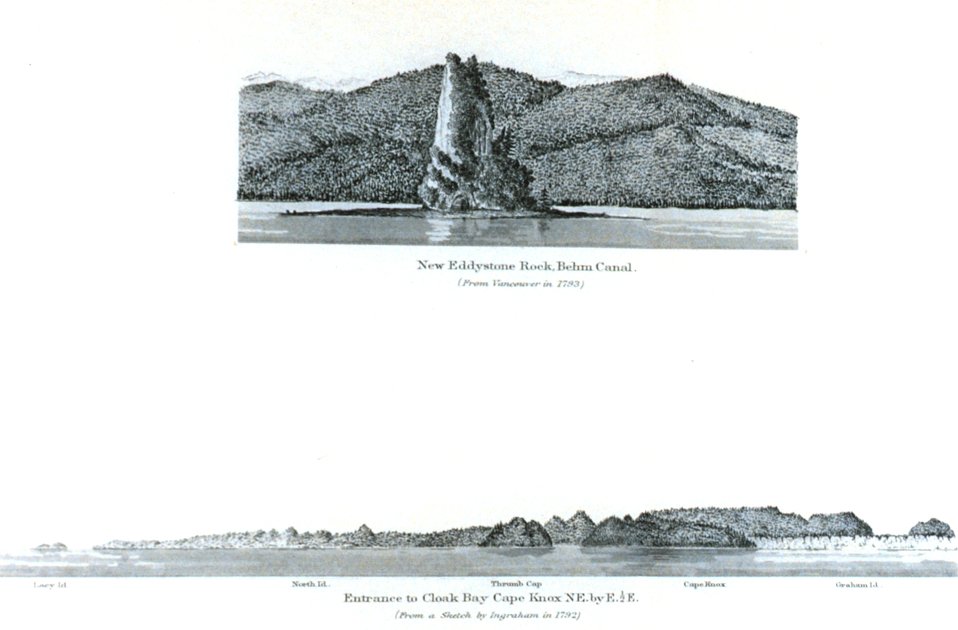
New Eddystone Rock, Behm Canal. Entrance to Cloak Bay. In: Pacific Coast Pilot Alaska Part I 1883. P. 50. Library call number VK943 .N3 1883.